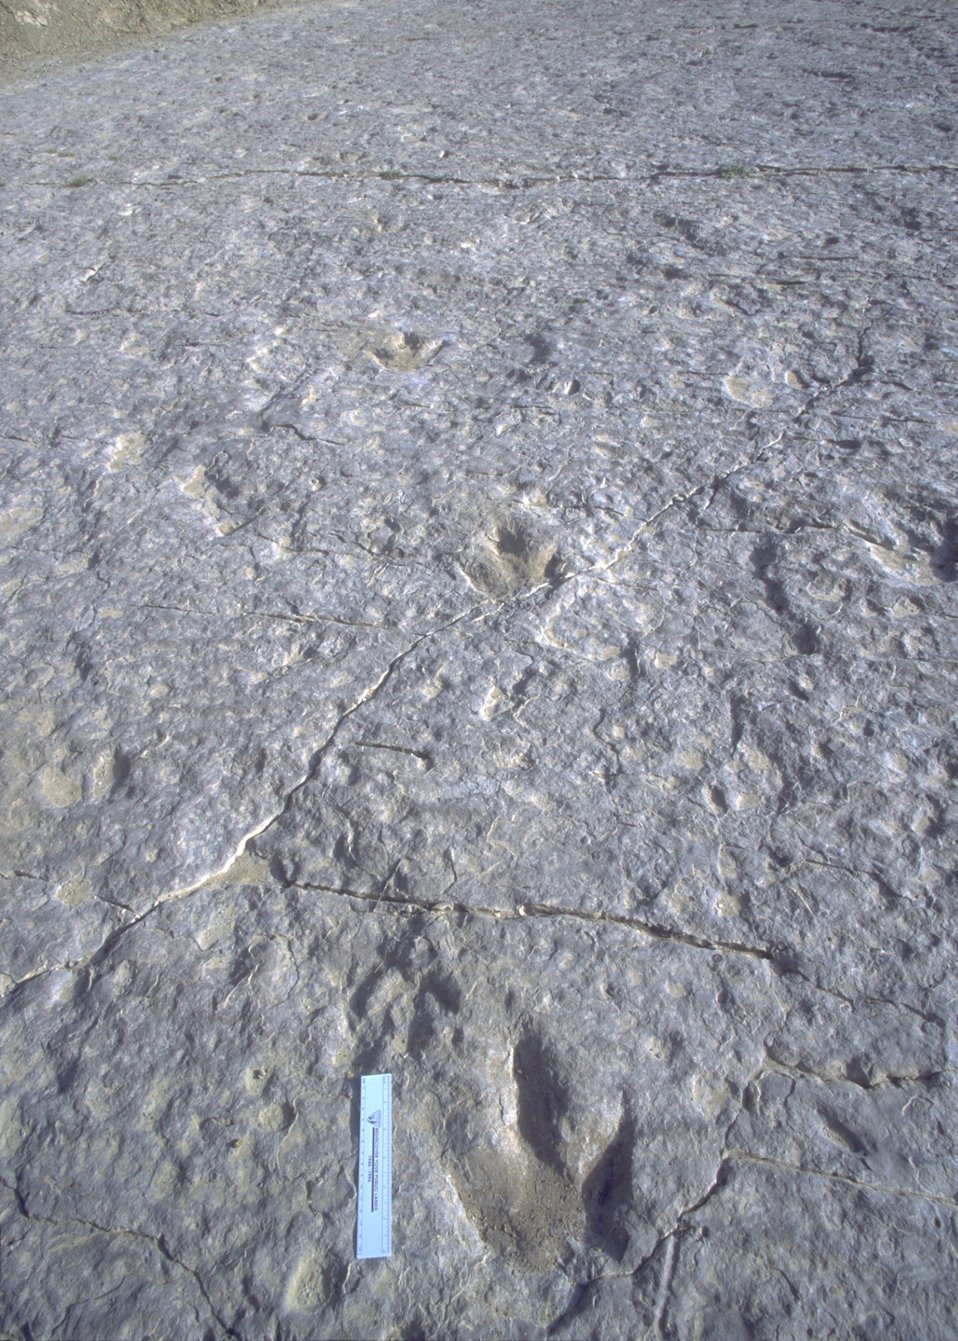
Series of dinosaur tracks at the Red Gulch Dinosaur Tracksite, Worland Field Office.